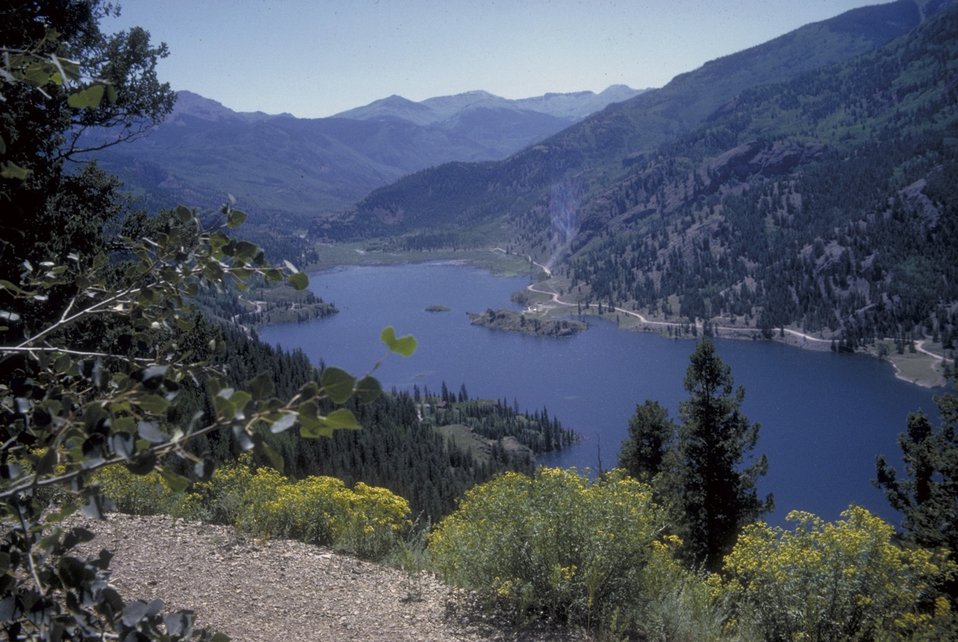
Back Country